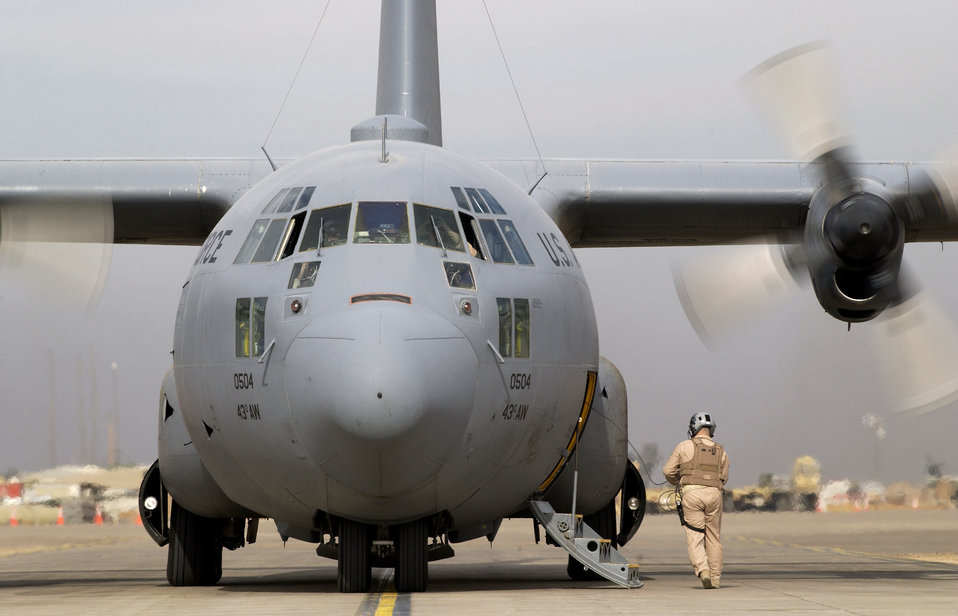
Pre-flight inspections

SOUTHWEST ASIA -- Tech. Sgt. Bryan Quinn conducts a pre-flight inspection on a C-130 Hercules prior to taking off from here Dec. 4. The C-130s are supporting both operations Iraqi Freedom and Operation Enduring Freedom. Sergeant Quinn is a loadmaster with the 379th Air Expeditionary Wing.